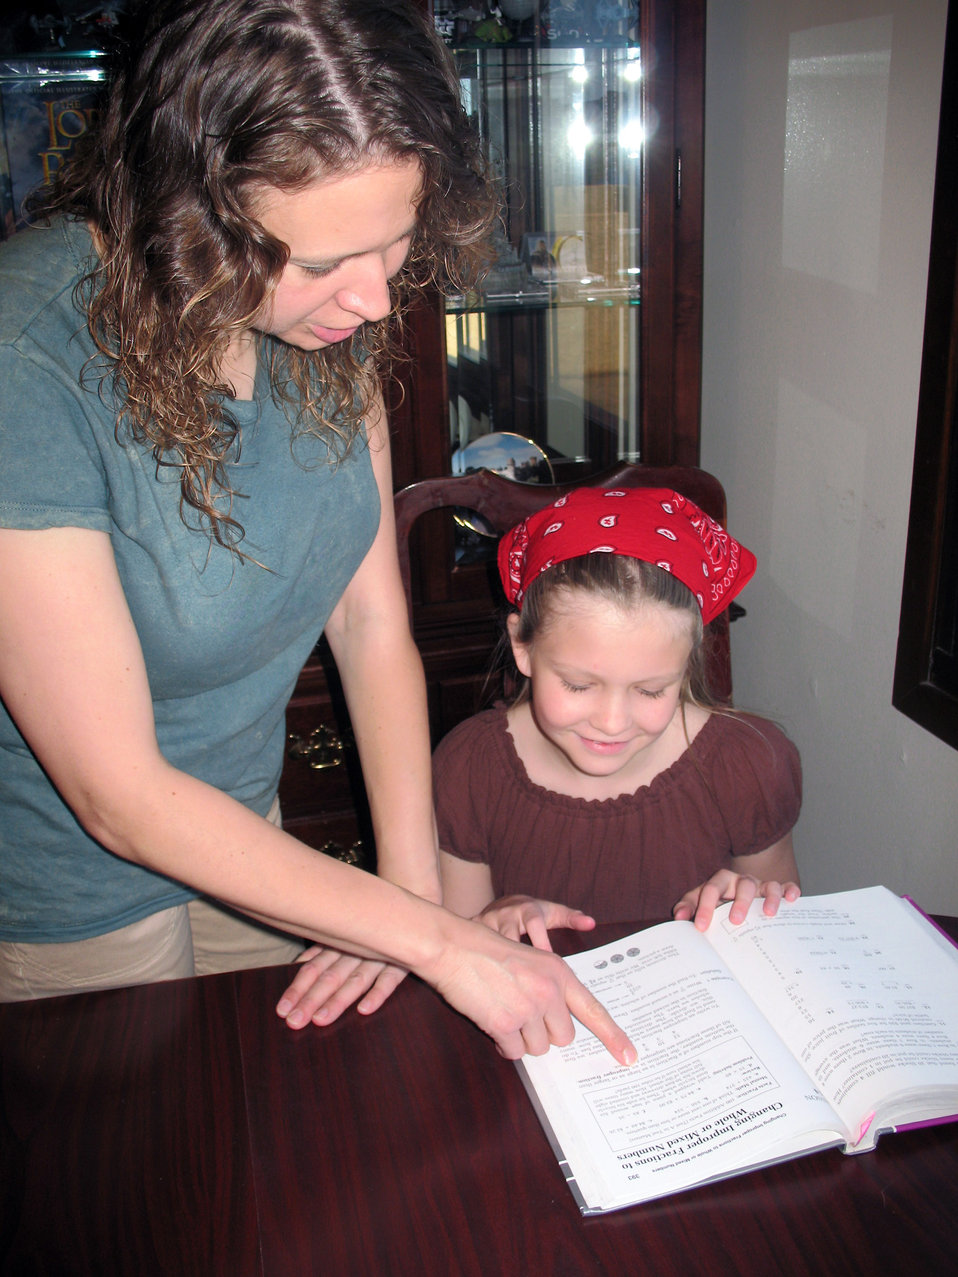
United in Love eases deployment separation at Lajes Field

Angela Horton helps her daughter with her math homework June 21 at Lajes Field, Azores. Angela, a mother of four, is the sole caregiver for her children when her husband's military duties require him to be away from home. While Airmen are deployed, their spouses can get support through a Lajes Field group called United in Love.